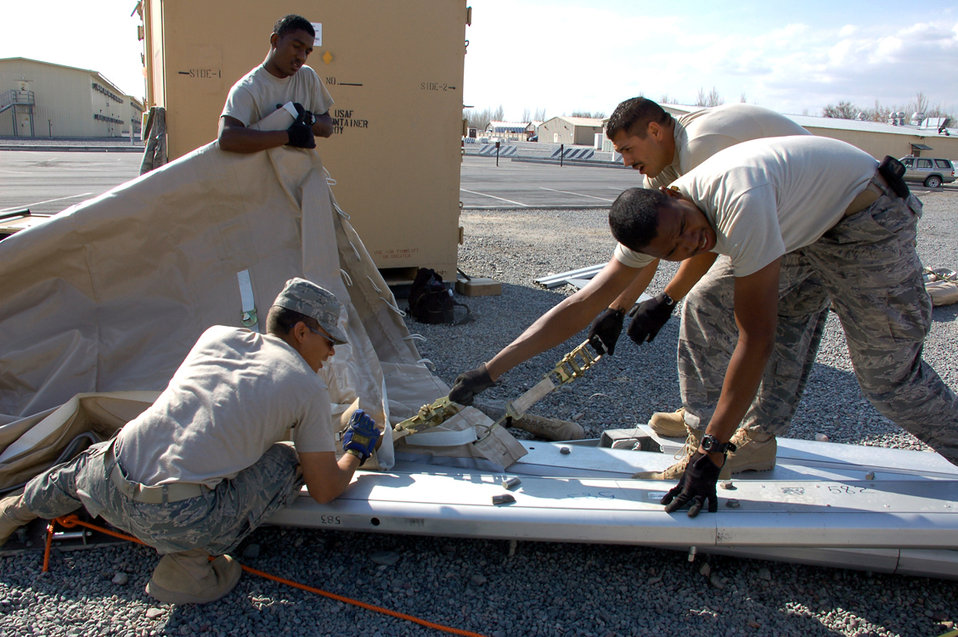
BEAR builds new quarters for forces at Manas

Airman 1st Class Jonathan Candelaria (from left to right), Airman 1st Class Keeon Pullen, Staff Sgt. Timothy Robinson and Staff Sgt. Eric Lopez pull vinyl-composite material through the slots of in-wall arches during the construction of a 4,000-foot dome, being built March 30 at Manas Air Base, Kyrgyzstan. The tents are being erected in preparation for the increased number of coalition personnel transiting through Manas to and from Afghanistan. The Basic Expeditionary Airfield Resources team are deployed from Holloman Air Force Base, N.M.